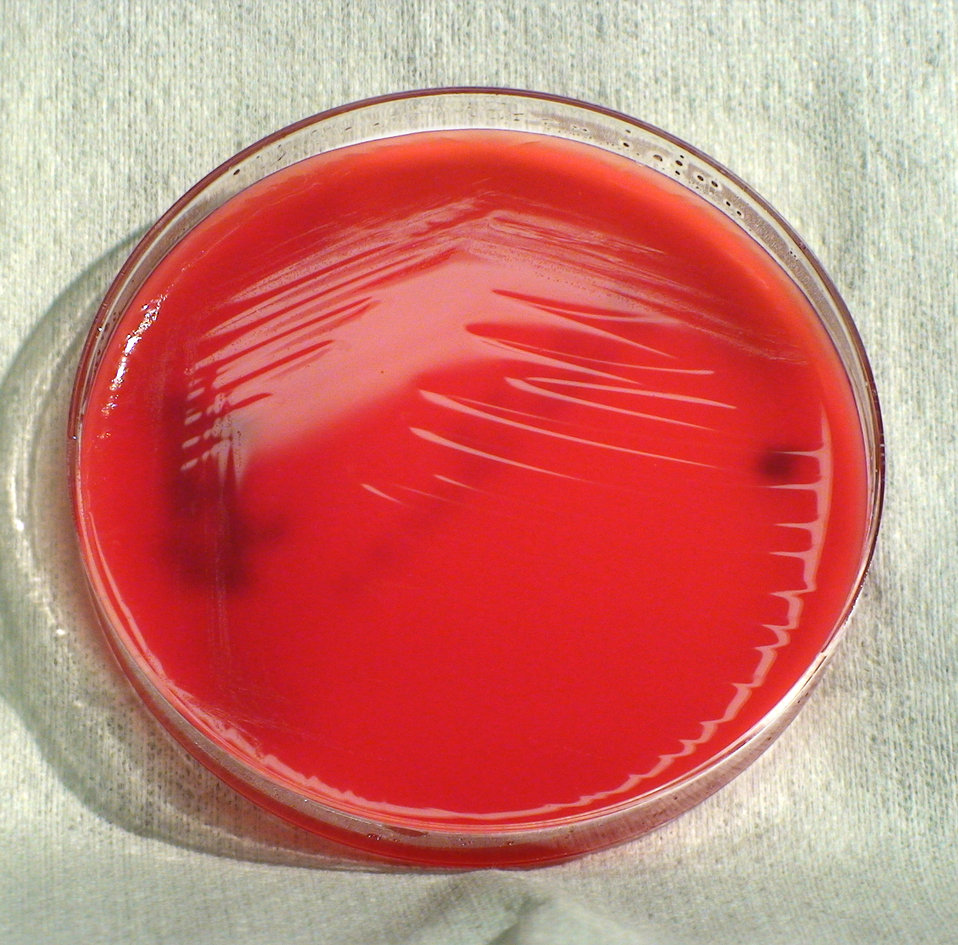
This photograph depicts the colonial morphology displayed by Gram-negative Kingella kingae bacteria, which was grown on a medium of sheep's blood agar (SBA), for a 24 hour time period, at a temperature of 37�C. See PHIL 12451, for a closer view of these bacterial colonies.